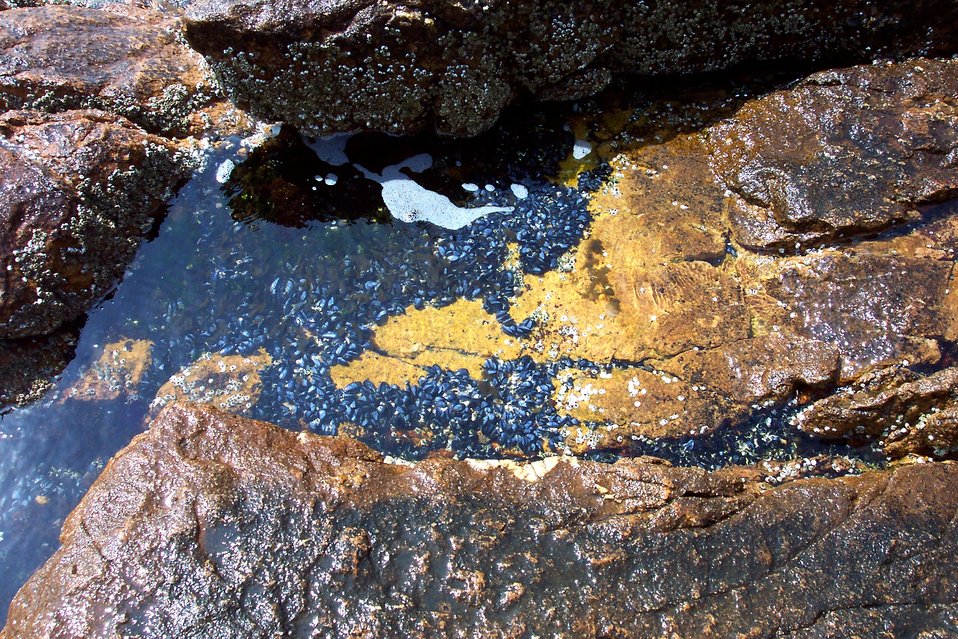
Tide pool with mussels below Bass Harbor Head Lighthouse.